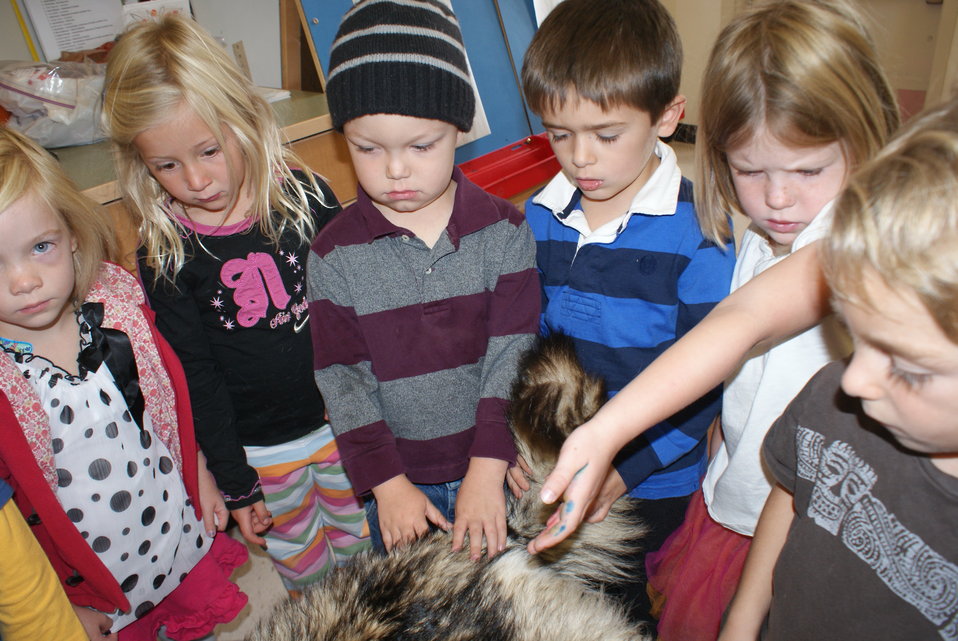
Scientists in the Community Program

U.S. Fish and Wildlife Service Mountain-Prairie Region Deputy ARD for External Affairs, Matt Kales, introduces early childhood education students at William Roberts Elementary School in Denver to some of Colorado's native and historic wildlife species.